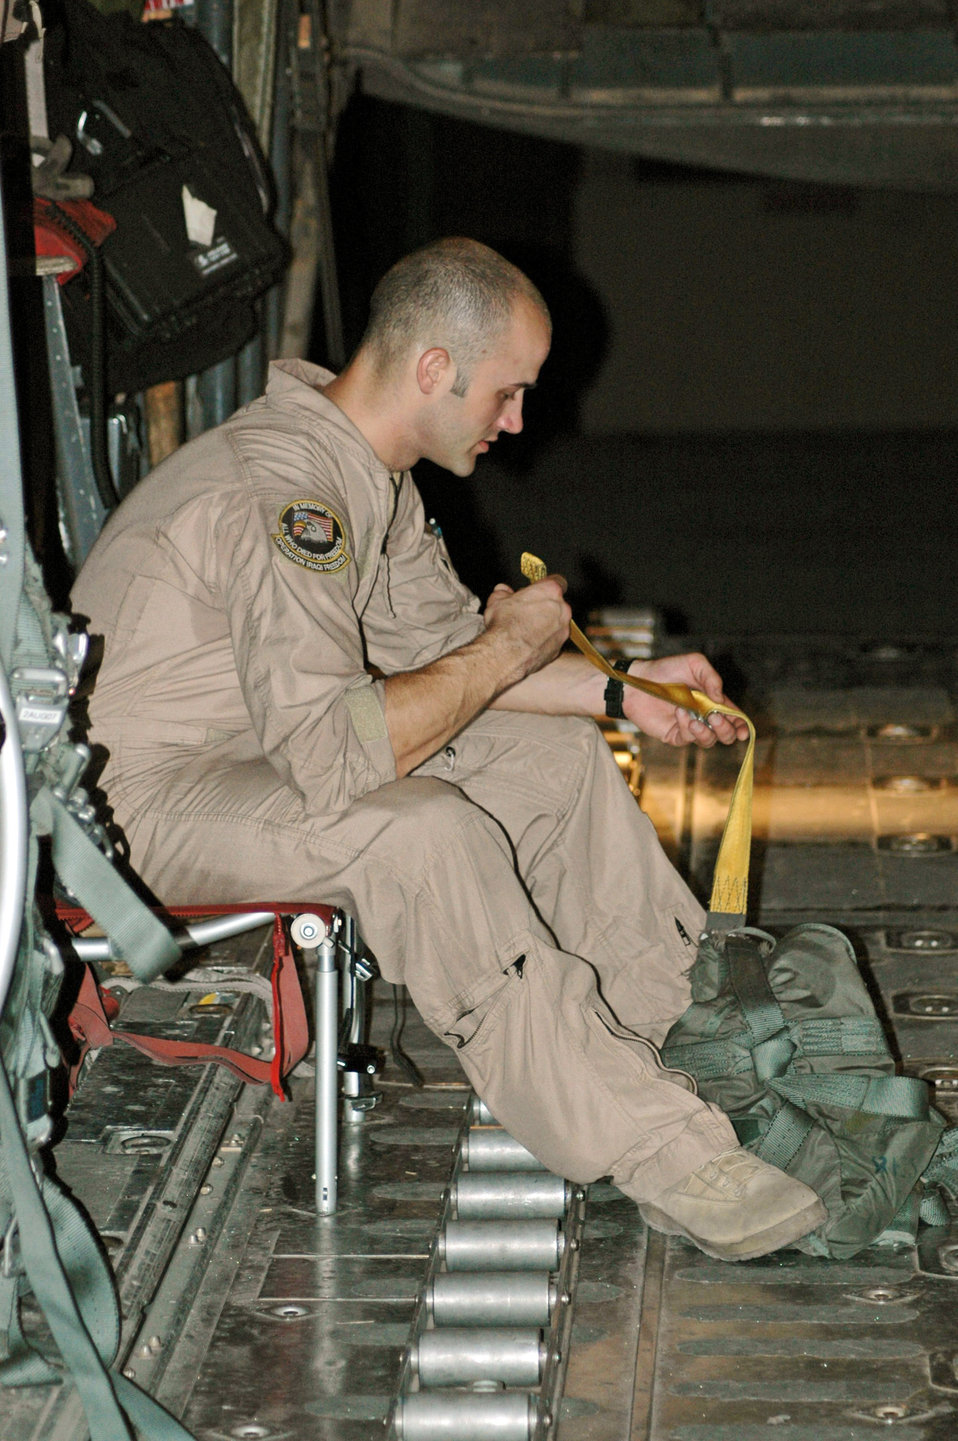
Loadmasters: night life of C-130 mission hackers

Staff Sgt. Tommy Greeness prepares his safety equipment prior to a low-level airdrop over Basra, Iraq. The purpose of the airdrop was to spread leaflets over the battlefield below, sending a strong message to enemy insurgents discouraging acts of violence. Sergeant Greeness is a C-130 Hercules loadmaster with the 746th Expeditionary Airlift Squadron.